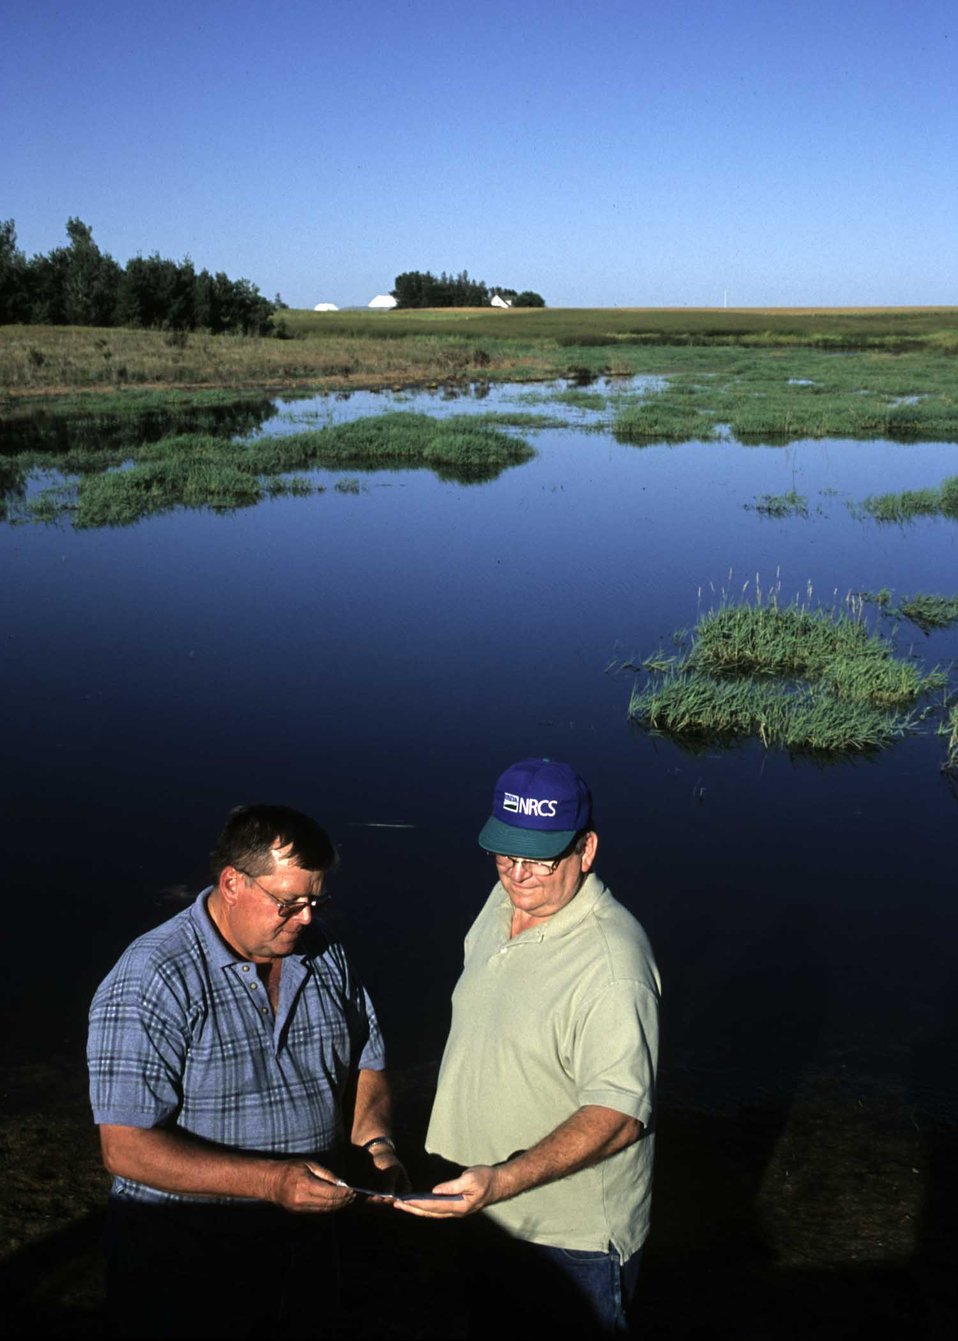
NRCS conservationists discuss technical aspects of a wetland restored through the CREP program in Calhoun County, Iowa.